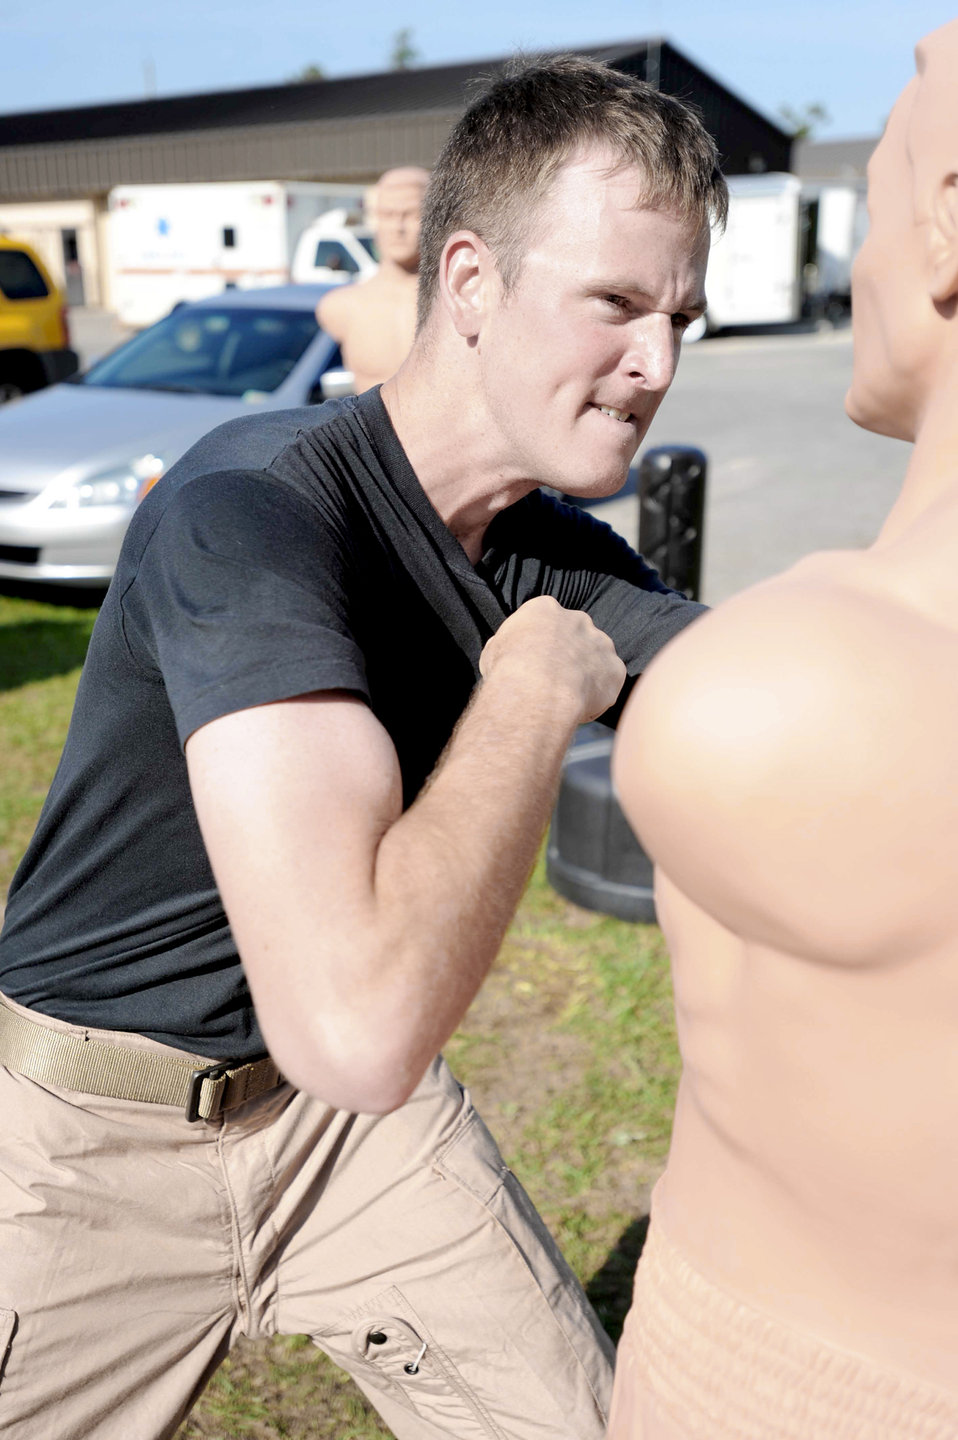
Survival Training vs. OPFOR

An Airman participating in survival, evasion, resistance, and escape training, punches a strike-dummy during combat skills training outside the SERE training center May 13, 2010, at Hurlburt Field, Fla.